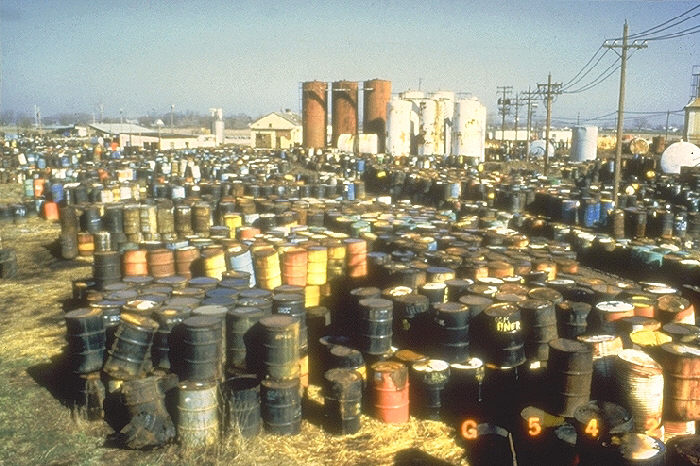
Toxic waste dump, superfund site.